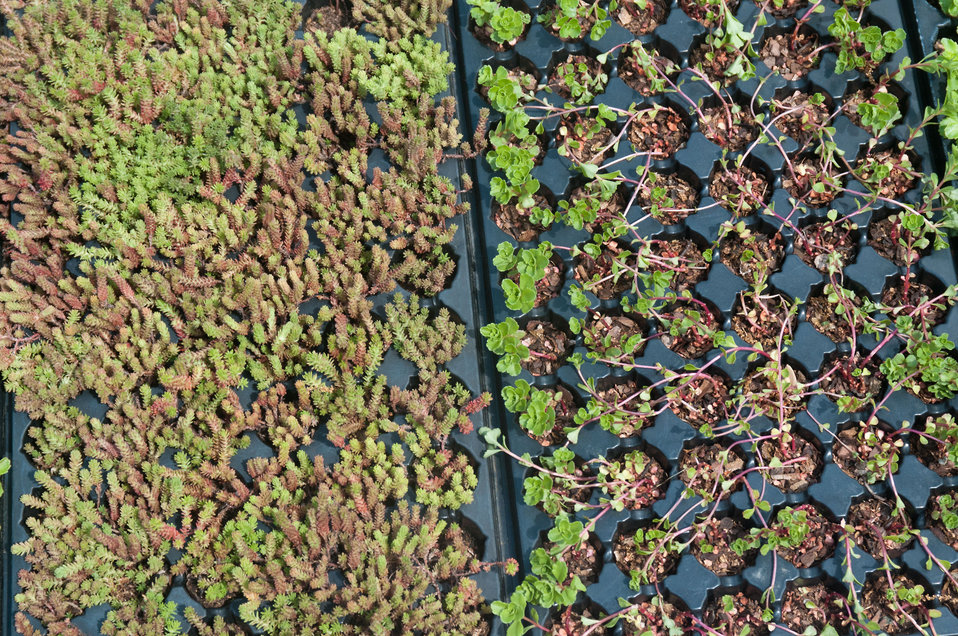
Rooftop vegetable garden is ready for planting at Bread for the City in Northwest Washington, DC, on Friday, April 29, 2011. The garden features specialized soil made of organic and inorganic material for rooftop gardens. The 30 wooden planters are about 4 inches tall but are not separate from the soil covering the roof, so there is a 10' depth to the plant in the boxes. Ground cover plants are already on site and await a team of volunteers to plant them in the walkways to retain moisture and help keep the soil temperature stable. This will be the largest of this kind in the Metro DC area. In addition to supplementing the fresh vegetable given to the community, it will also allow local residents to grown produce that is not normally marketed in this area.